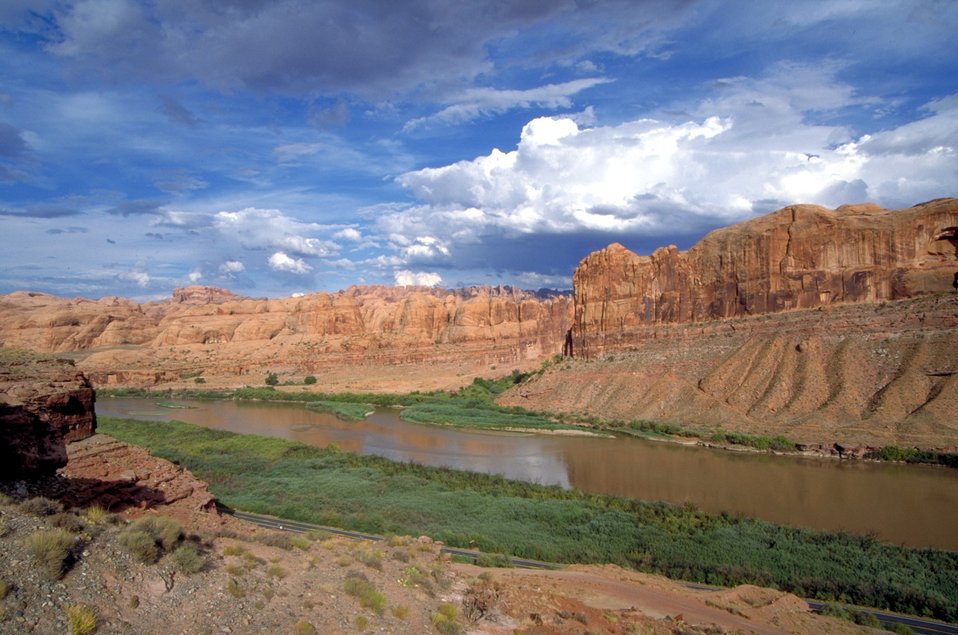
Colorado River near Moab, Utah.